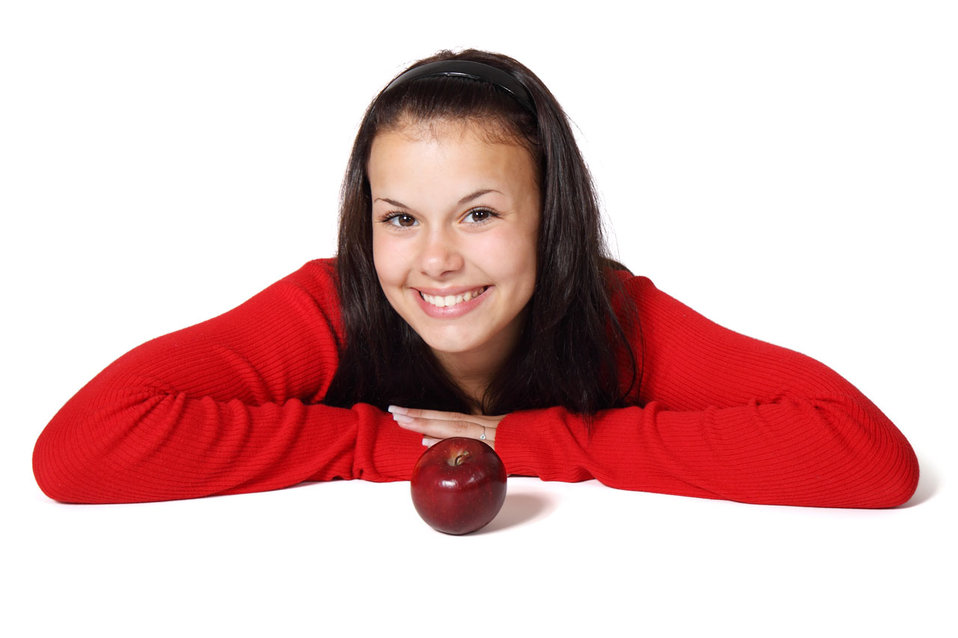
Healthy snack

Young woman is having a red apple for snack.